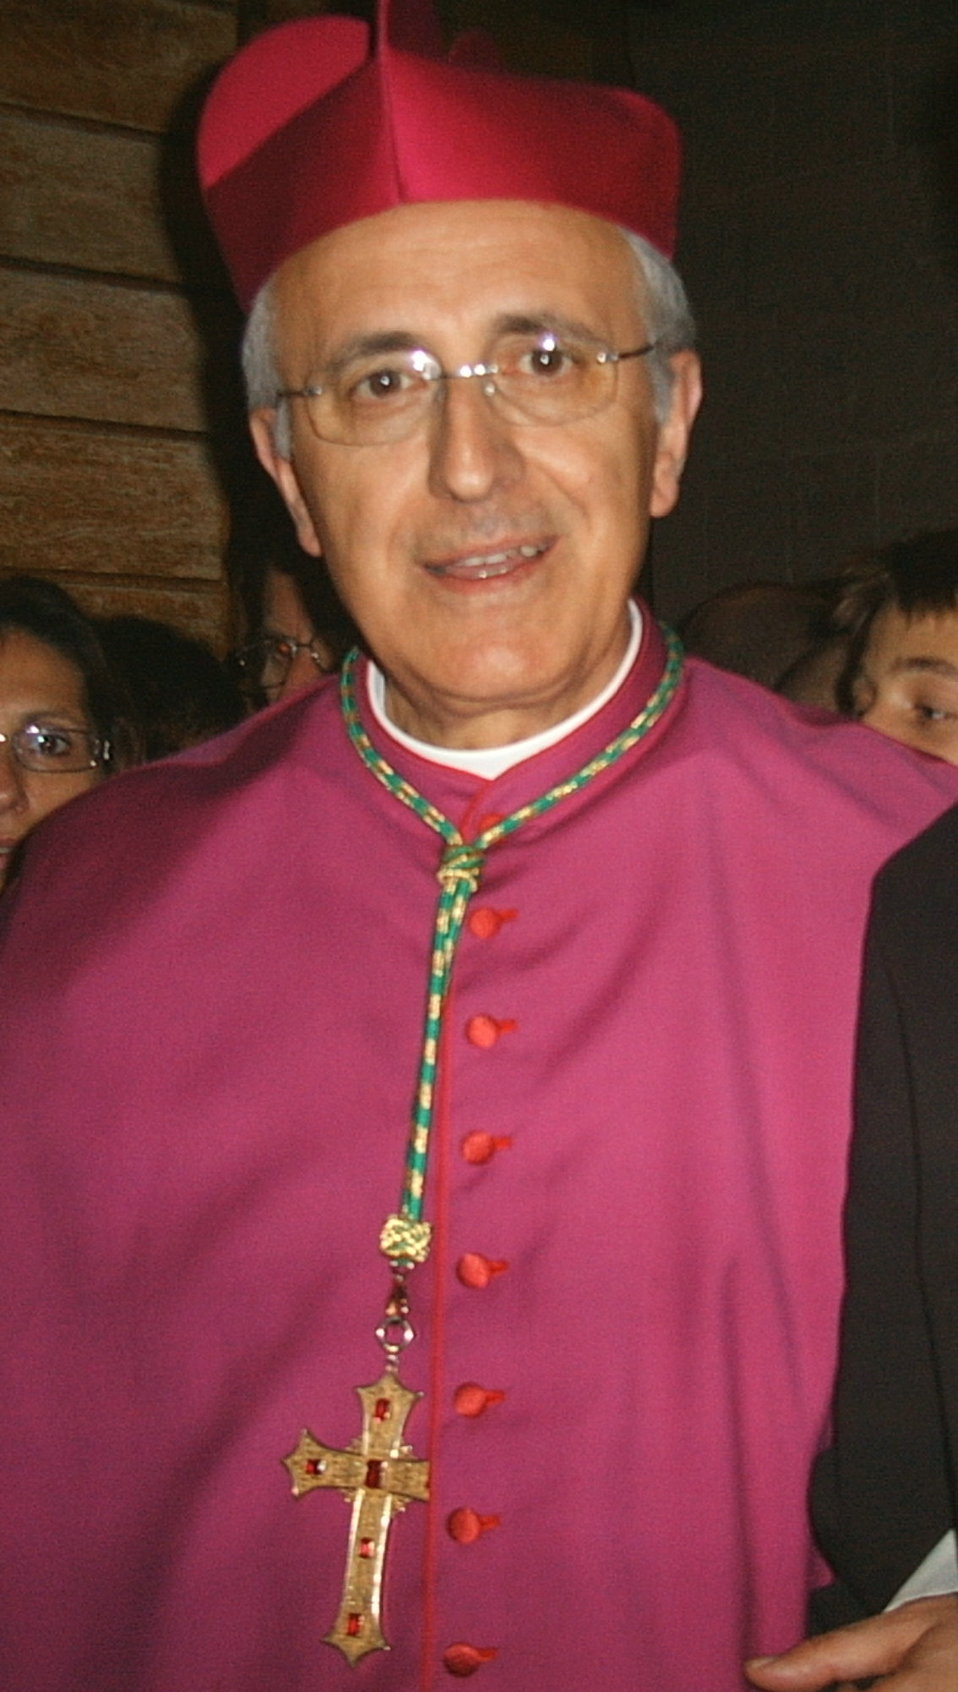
Italiano: Monsignor Domenico Umberto D'Ambrosio nel 2006